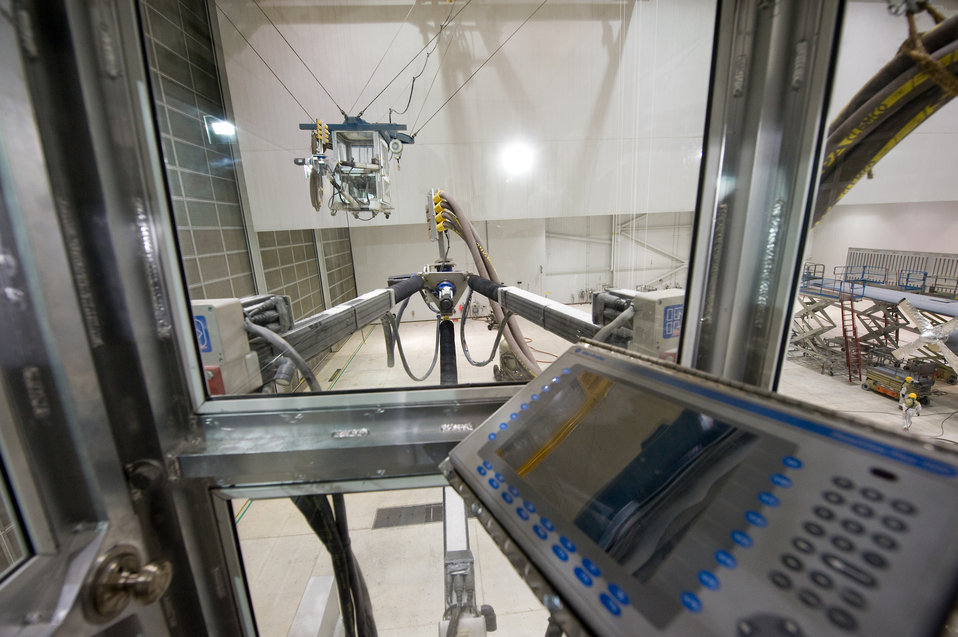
Depaint the big easy way

An Area Multi-axis Platform, or AMP, is suspended from overhead rails to another AMP at the 402nd Maintenance Support Squadron at Robins Air Force Base, Ga., Oct. 8, 2009. The operator controls the three-axis movement of the AMP and its four laser aimed nozzles that shoot compressed air and media at painted surfaces. The process breaks up the paint and reveals the bare surface underneath it. Inside the cab fresh air is pumped in for the operator and to push plastic beads and paint particles out of cab openings.